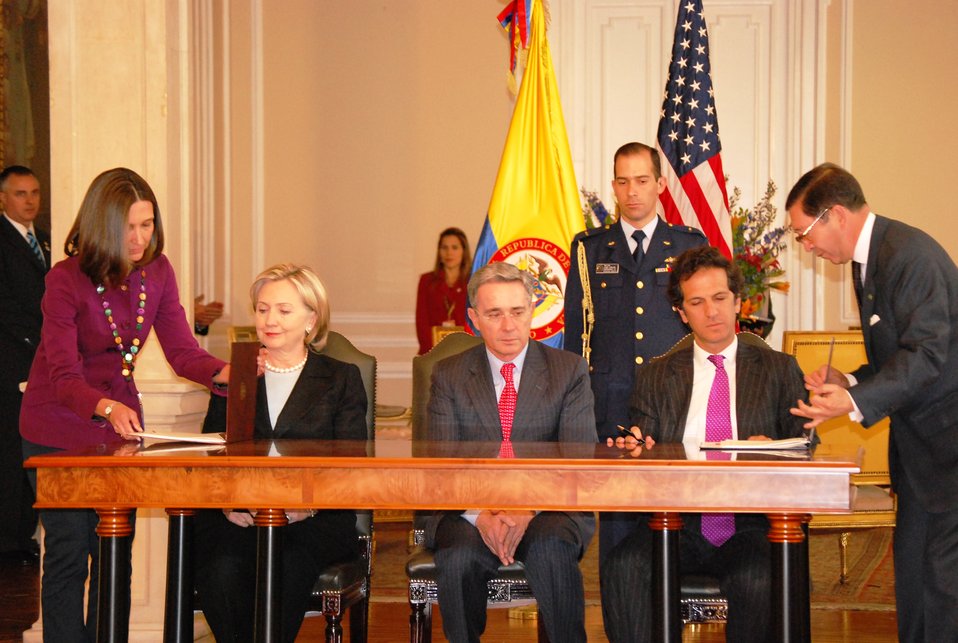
Secretary Clinton and Colombian Foreign Minister Sign Science and Technology Agreement

Colombian President Uribe watches U.S. Secretary of State Hillary Rodham Clinton and Colombian Foreign Minister Jaime Bermudez prepare to sign an agreement that will expand cooperation on science and technology between the United States and Colombia in Bogotá, Colombia, on June 9, 2010.